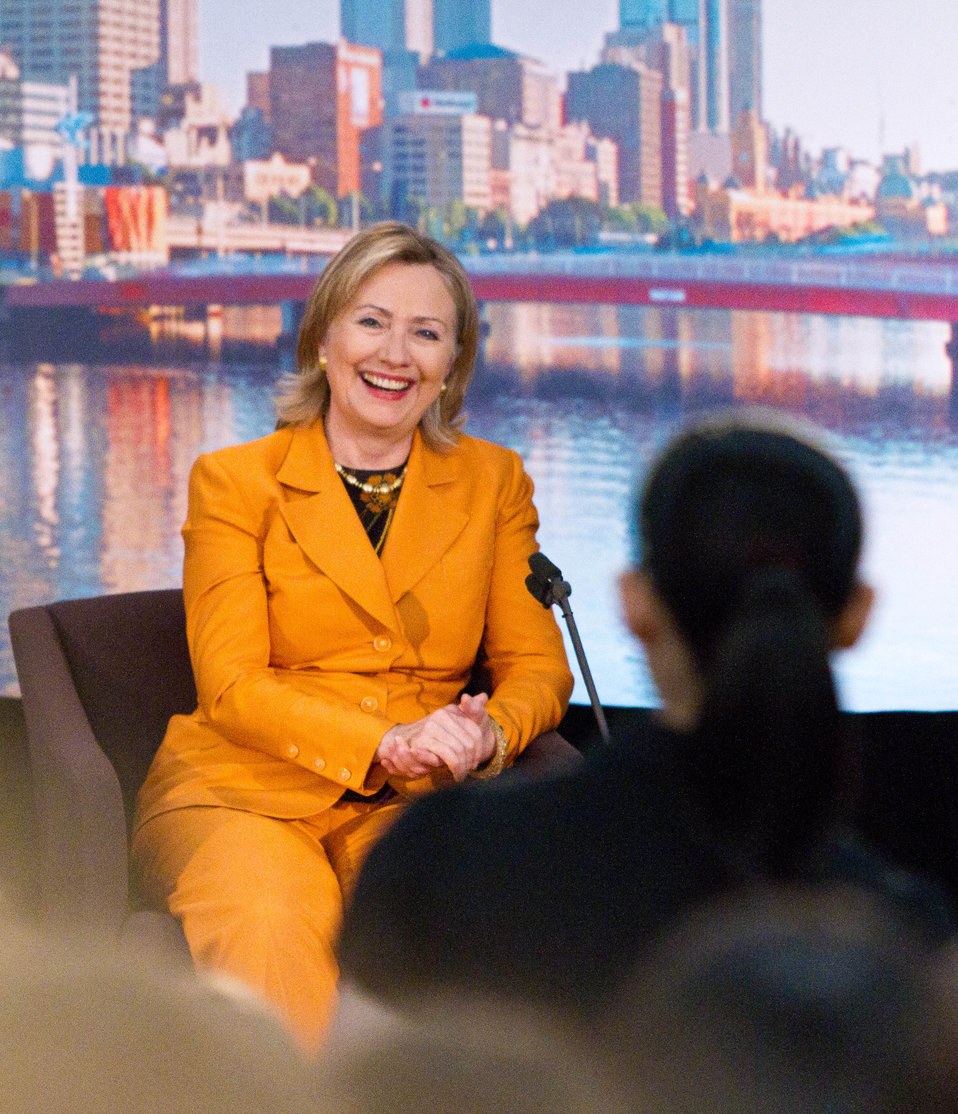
Secretary Clinton Jokes With Australian Students

U.S. Secretary of State Hillary Rodham Clinton jokes with Australian students that university exams are tougher than being Secretary of State during a Townterview with the Australian Broadcasting Company in Melbourne, Australia, on November 7, 2010.